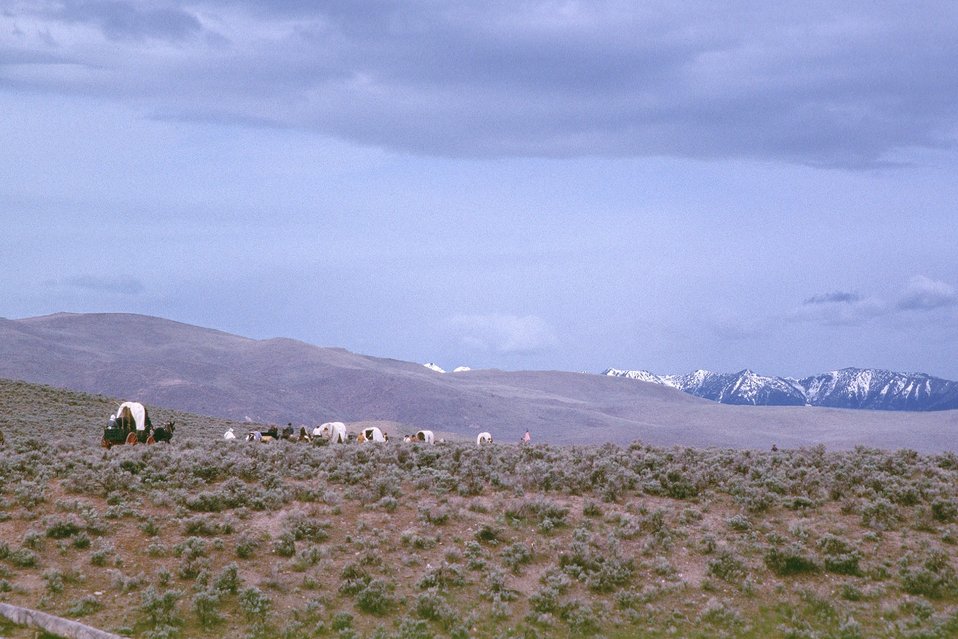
NHOTIC 10th Anniversary, wagon train reenactment. Covered wagons on the Oregon Trail, mountains in background.